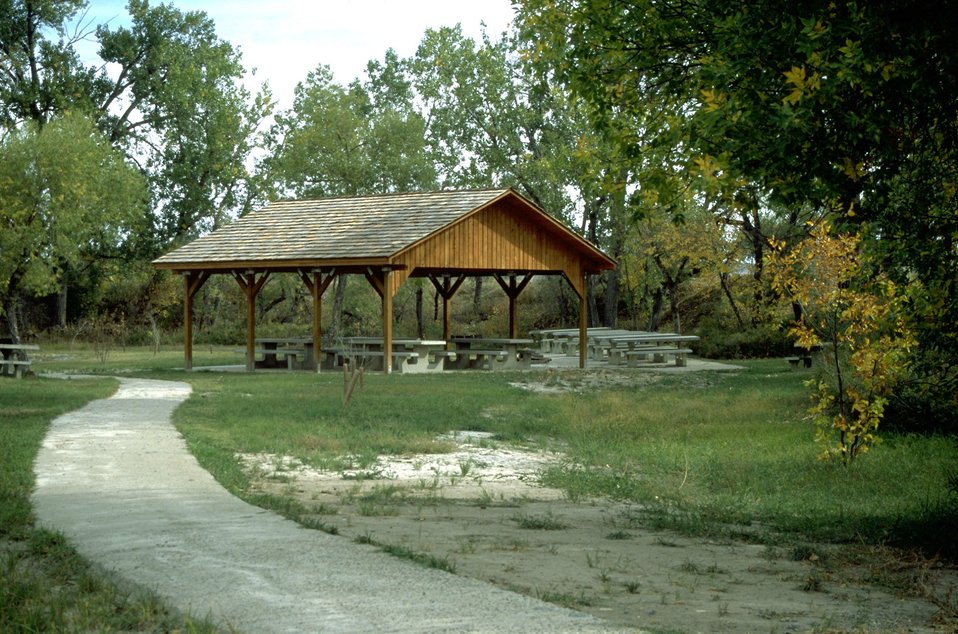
Group Picnic Shelter at Matthews Recreation Site